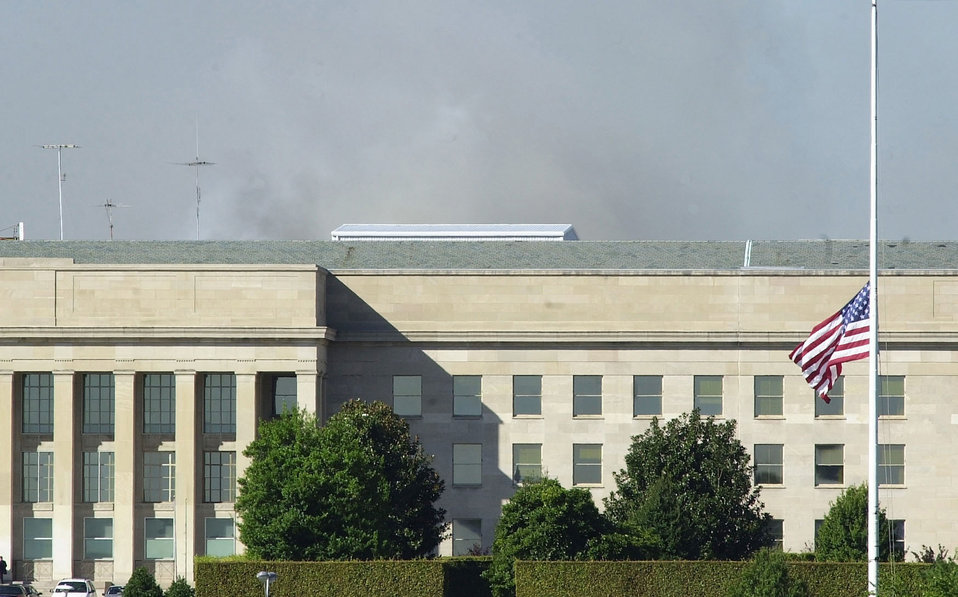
Half-Mast

WASHINGTON -- U.S. flags flew at half-mast at the Pentagon on Sept. 12, 2001, while firefighters continued to extinguish flames after a highjacked commercial jetliner crashed into the building the day before. The suspected terrorist attack caused extensive damage to the Pentagon and followed similar attacks on the twin towers of the World Trade Center in New York City.